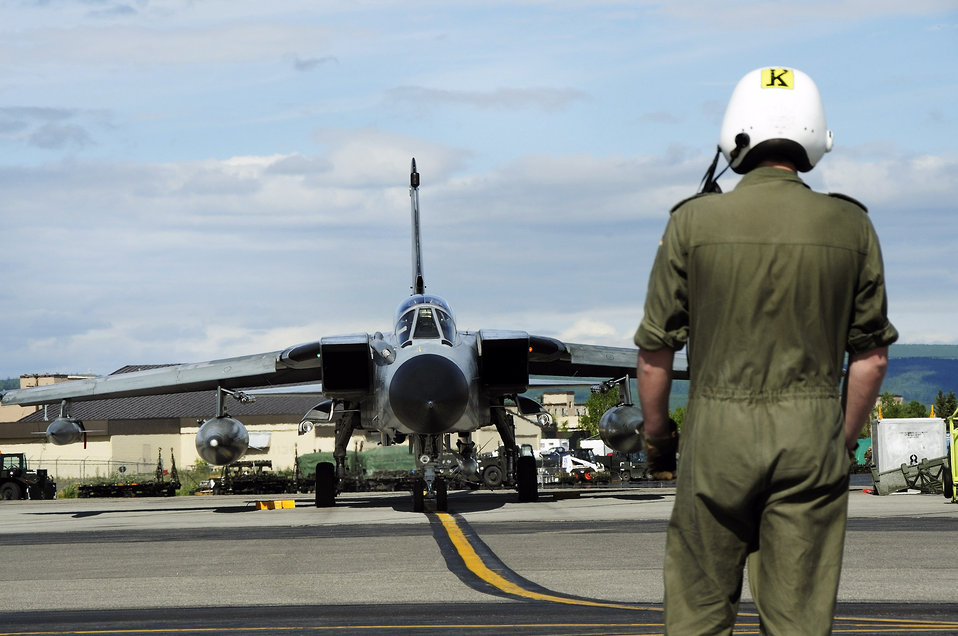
Joint training at Red Flag Alaska 08-3

A German crew chief directs the pilot of a Tornado down the taxiway to take off June 9 at Eielson Air Force Base, Alaska, during Red Flag-Alaska 08-3. Red Flag-Alaska is a series of Pacific Air Forces commander-directed field training exercises for U.S. forces, providing joint offensive counter-air, interdiction, close-air-support and large force-employment training in a simulated combat environment.